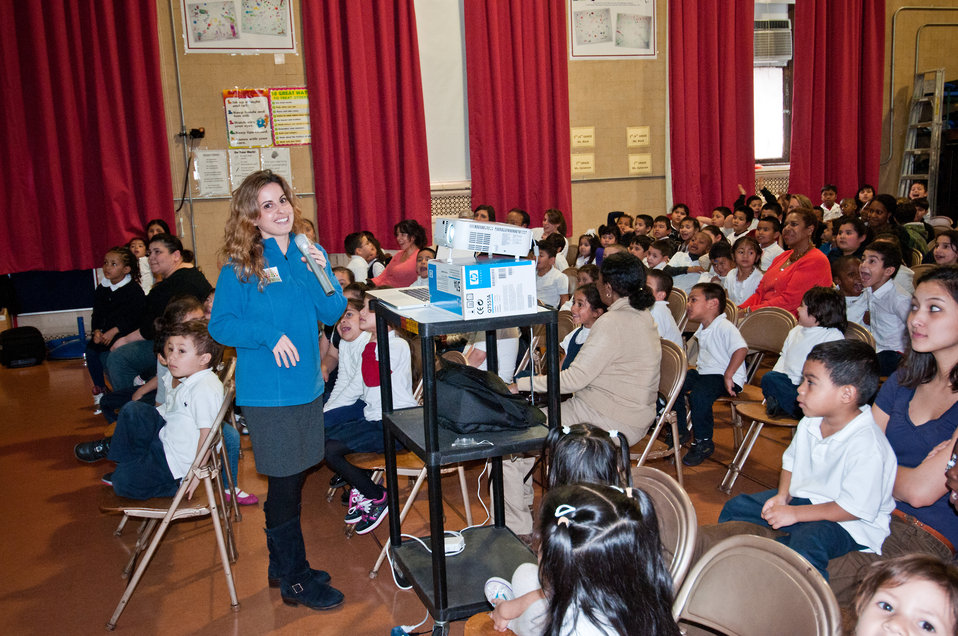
U.S. Department of Agriculture Outreach and Education Coordinator Annie Ceccarini got the audience energized when she asked the students of W. B. Powell Elementary School, what was the student's favorite fruit, on Thursday, March 10, 2011 in Washington, D.C. After naming several and being boo'ed for each, she said watermelon and the crowd cheered. Ceccarini is part of The People’s Garden team for W. B. Powell Elementary School, consisting of the Washington Capitols, U.S. Department of Agriculture and D.C. Public Schools in Washington, D.C. revealed to 289 parents and students, the School Garden Design Concept on March 10, 2011. The design draft was created by Forest Service landscape architect Matt Arnn, with the support of Natural Resources Conservation Service landscape architect Bob Sneickus and Project Manager Leslie Burks who worked with the Principal Janeece Docal and the school during an earlier visit to develop illustrated ideas from parents and students. Representing the Washington Capitols is Defenseman, Number: 52 Mike Green, Comcast SportsNet Analyst Alan May and Director of Community Relations Elizabeth Wodatch.